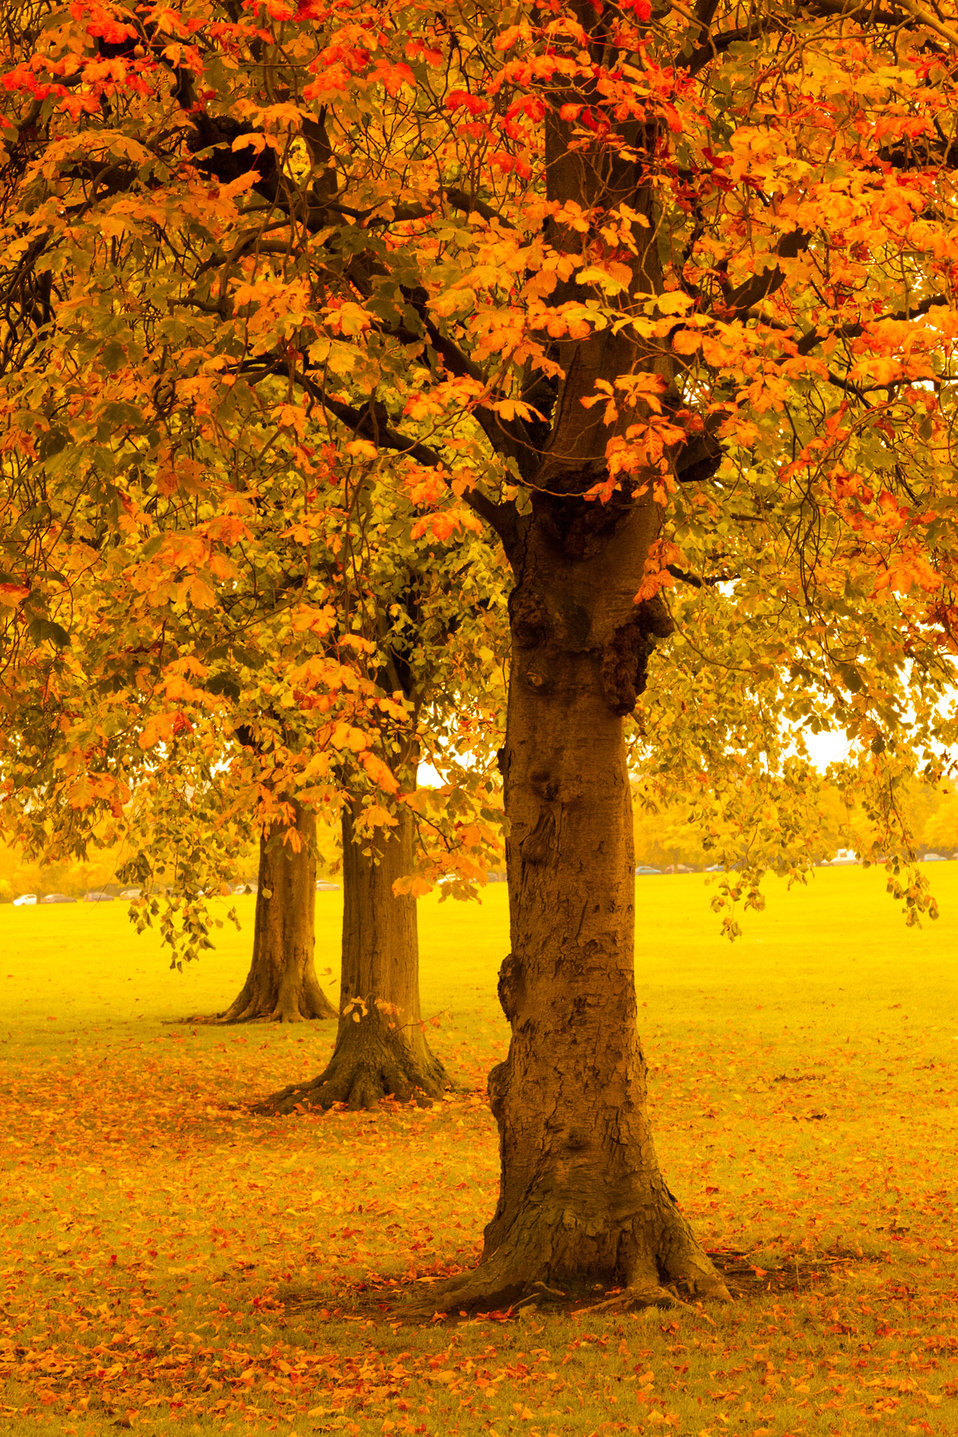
Autumn trees in park

Trees in the park in autumn.